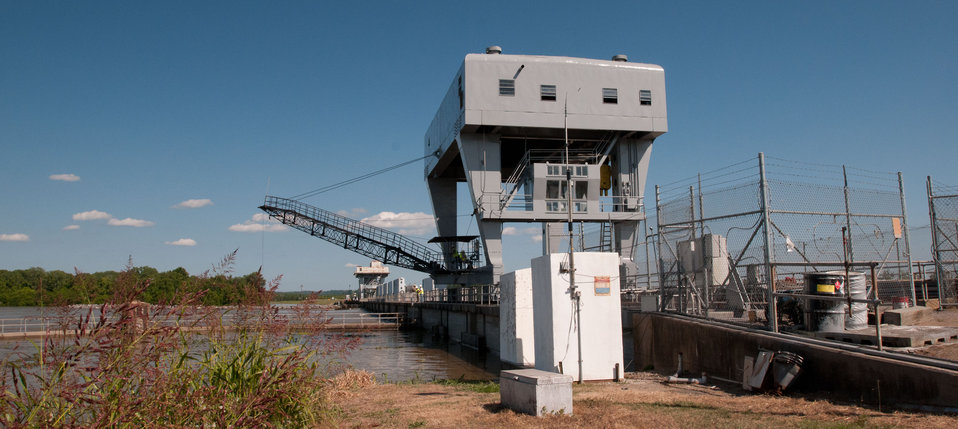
The Army Corps of Engineers conduct daily depth measurements along the intake side of The Old River Control Complex, Low Sill Structure in Concordia Parish, LA, on Tuesday, May 17, 2011. The measurements tell both the condition along the intake “ramp” and allow them to calculate the flow through the gates. The Old River Control Complex is designed to channel as much as 30 percent of the Mississippi River’s flow into the Gulf of Mexico through it’s eleven 44-foot wide gates across 566 foot span that separates the Mississippi and (the outflow channel to the) Red and Atchafalaya Rivers. Rated at 300,000 million gallons per minute (note: That’s more than seven Olympic sized swimming pools every second). Although this helps the Mississippi River, it (along with other concerns, puts back pressure on the Red River and other waterways, possibly causing some flooding of farms to avoid a catastrophic breech of the levee system. Most of the gates have been opened by a rolling crane and stored in racks. Debris, some as larger than telephone polls make their way through the gates and pool in eddies. The constant motion and contact with other objects, strip trees of their branches and bark. 20-30 pound Carp can frequently be seen jumping out of the white water.